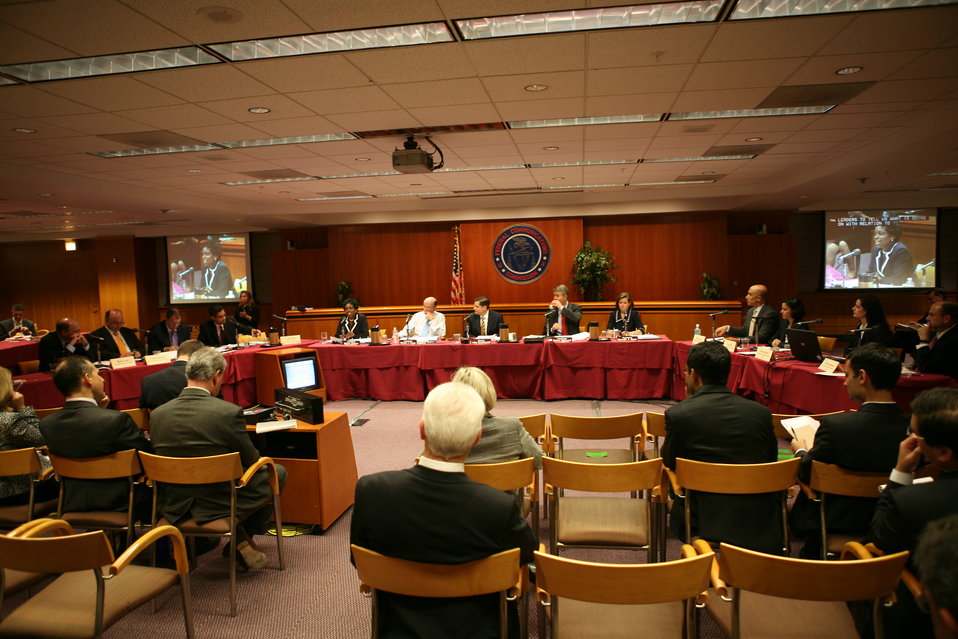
Broadband Midterm Review 9-29-09